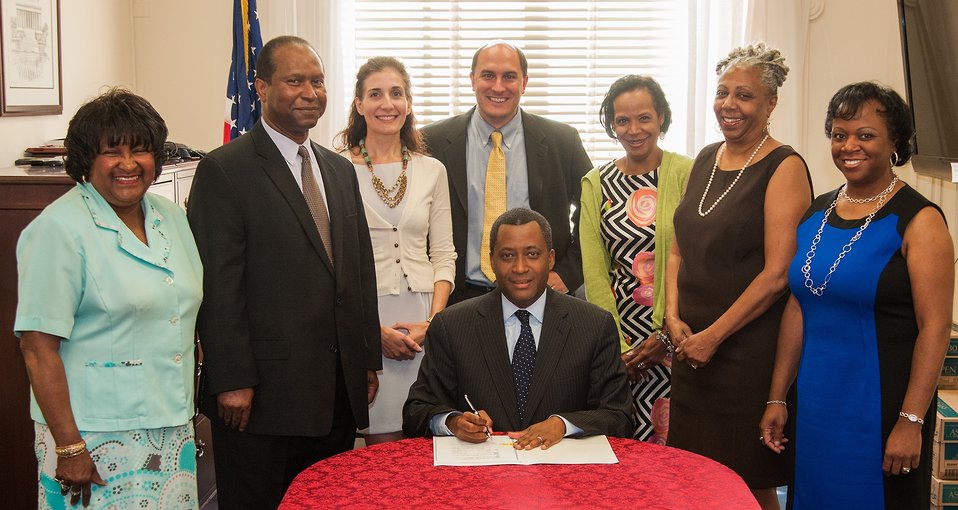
U.S. Department of Agriculture (USDA) Assistant Secretary for Civil Rights Dr. Joe Leonard, Jr. signs the USDA Departmental Regulation, Limited English Proficiency for USDA Conductive Programs at USDA headquarters in Washington, D.C. on Tuesday, Jun. 3, 2013. ( L to R behind Dr. Leonard: Administrative Assistant Dorethea Cox, Acting Director, Office of Compliance-Policy, Training and Cultural Transformation Ron Branch, Deputy Assistant Secretary for Civil Rights Lisa Pino, Special Assistant to Assistant Secretary for Civil Rights William Reid Strong, Chief of Staff, Winona Scott, Acting Chief of Policy Analysis Anna Stroman, and Executive Assistant Gwen Edmonson).